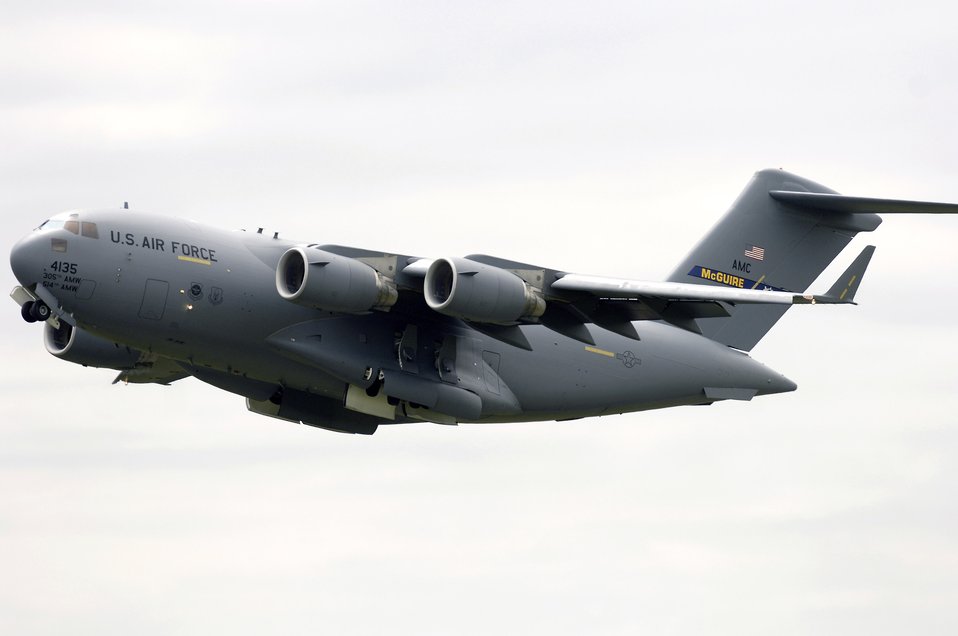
Globemaster in flight

A C-17 Globemaster III from the 305th Air Mobility Wing flies over McGuire Air Force Base, N.J., on Wednesday, May 10, 2006.